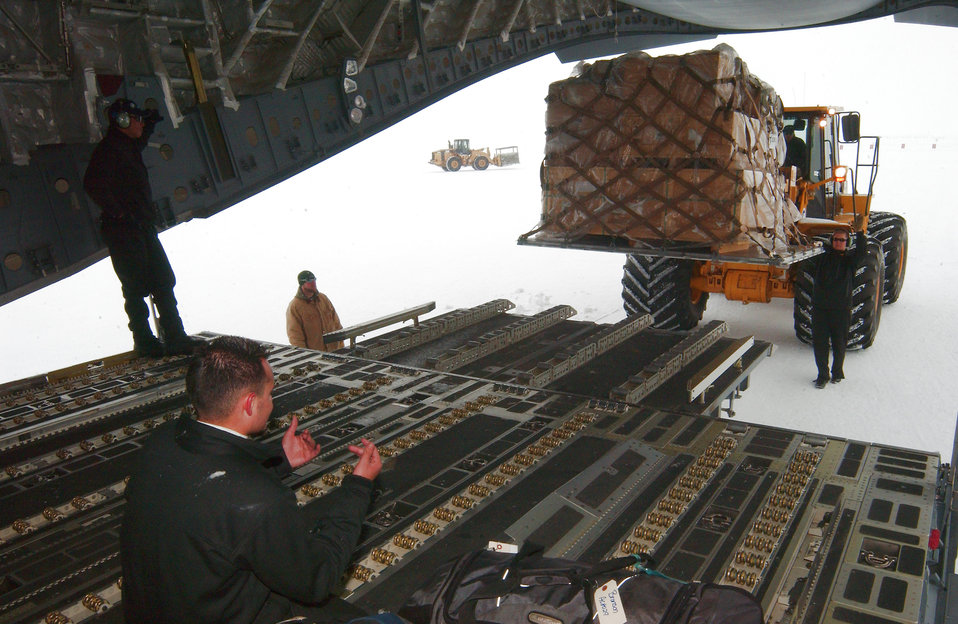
McChord Airmen fuel Operation Deep Freeze

Staff Sgt. Paul Garcia (bottom left) ensures cargo is safely loaded onto a C-17 Globemaster III prior to the return trip to Christchurch, New Zealand, during an Operation Deep Freeze mission Dec. 2. Sergeant Garcia is a 7th Airlift Squadron loadmaster from McChord Air Force Base, Wash.